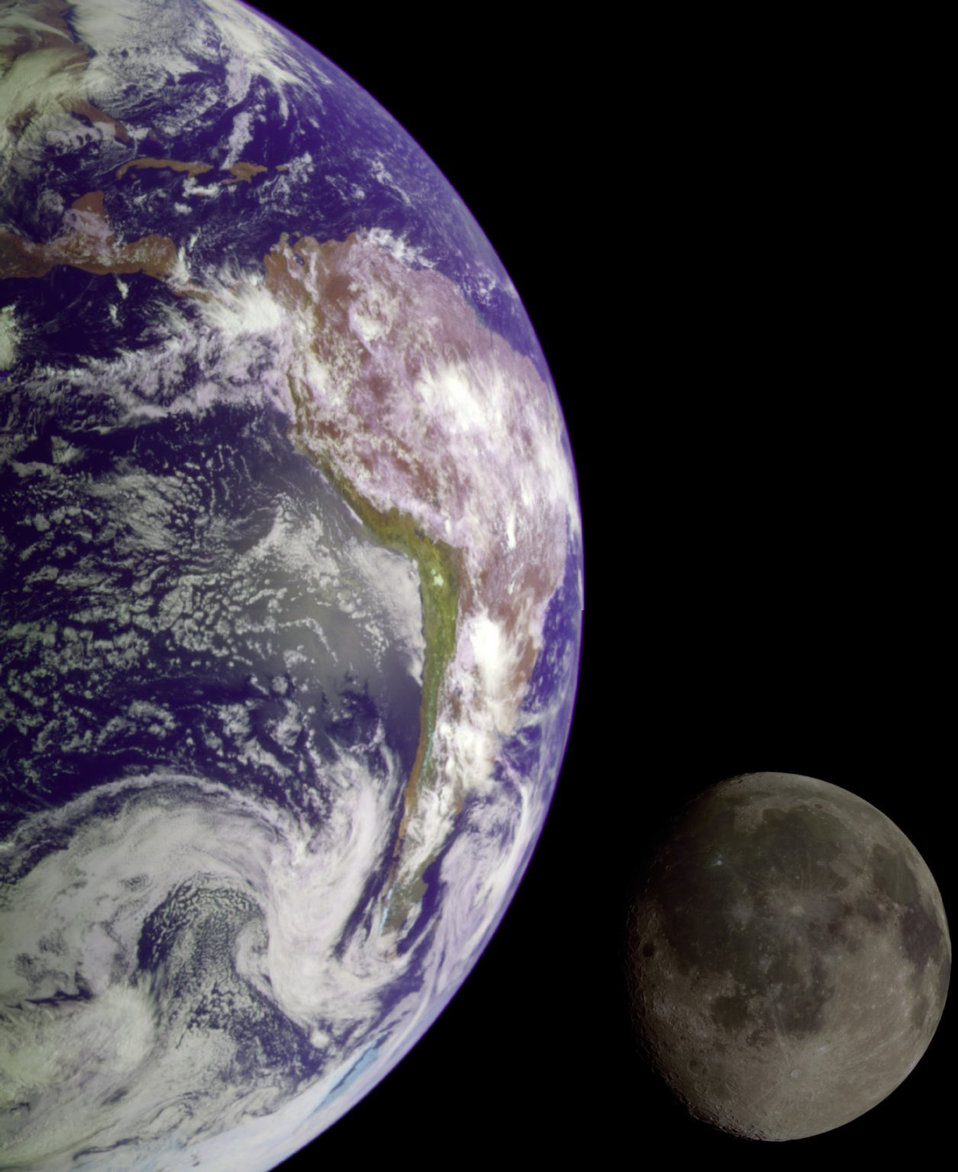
The Earth and Moon - NASA Great Images in Nasa Collection